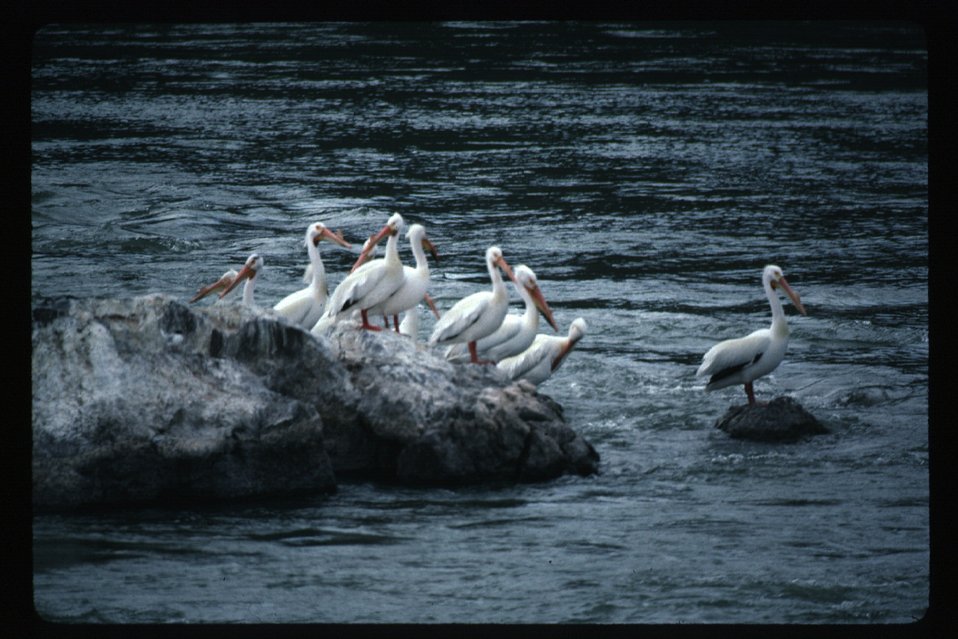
Pelicans on Snake River Wildlife USRD Upper Snake River District